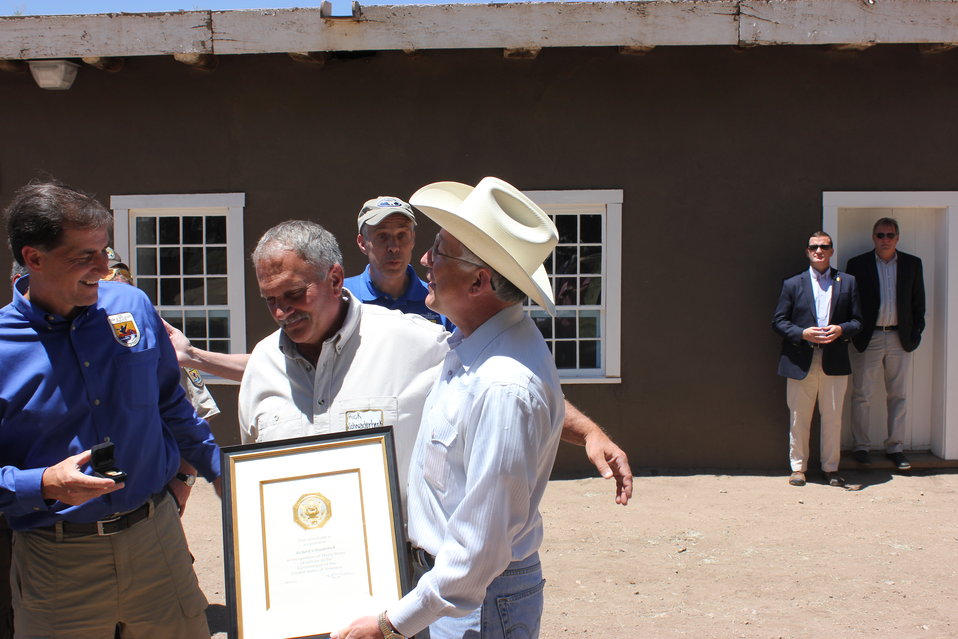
Historic Conservation Easement in Sangre de Cristo Mountains

Interior Secretary, Ken Salazar, and U.S. Fish and Wildlife Director, Dan Ashe, present Rick Schnaderbeck with an award for his many accomplishments throughout his 30 years with the Service.